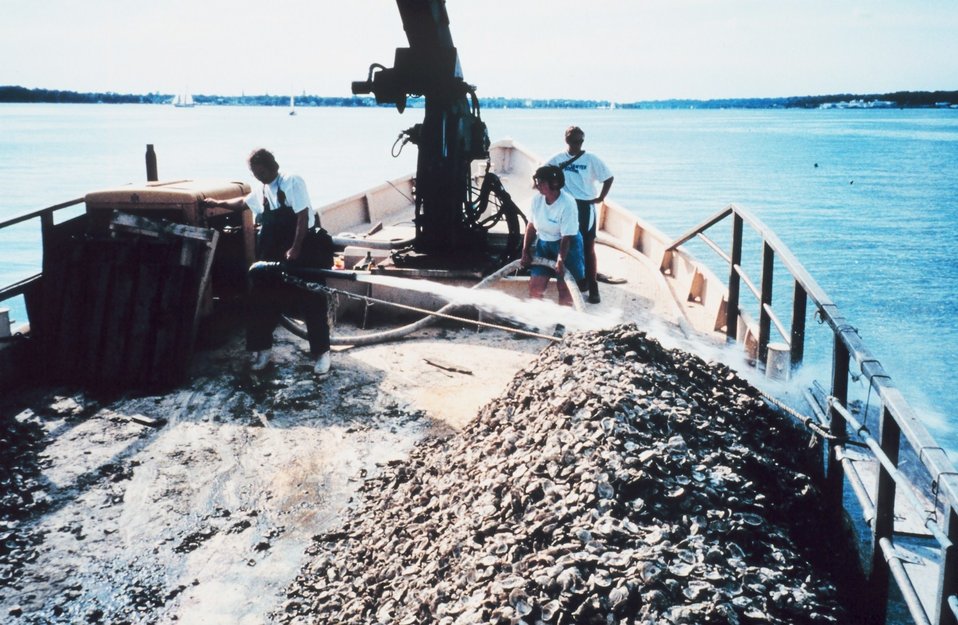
A firehose is employed by the Captain of the ROBERT LEE to spread oyster spat reared by the Oyster Recovery Partnership.